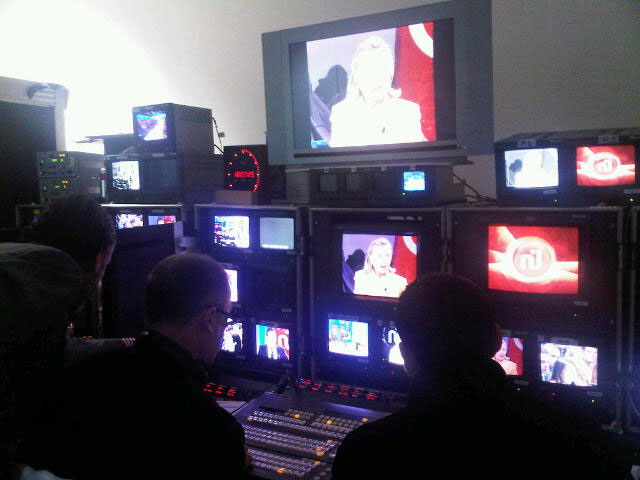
Behind the Scenes: Secretary Clinton Is Backstage on Nessma TV in Tunis

Backstage during a conversation with U.S. Secretary of State Hillary Rodham Clinton on Nessma TV in Tunis, Tunisia, on March 17, 2011.